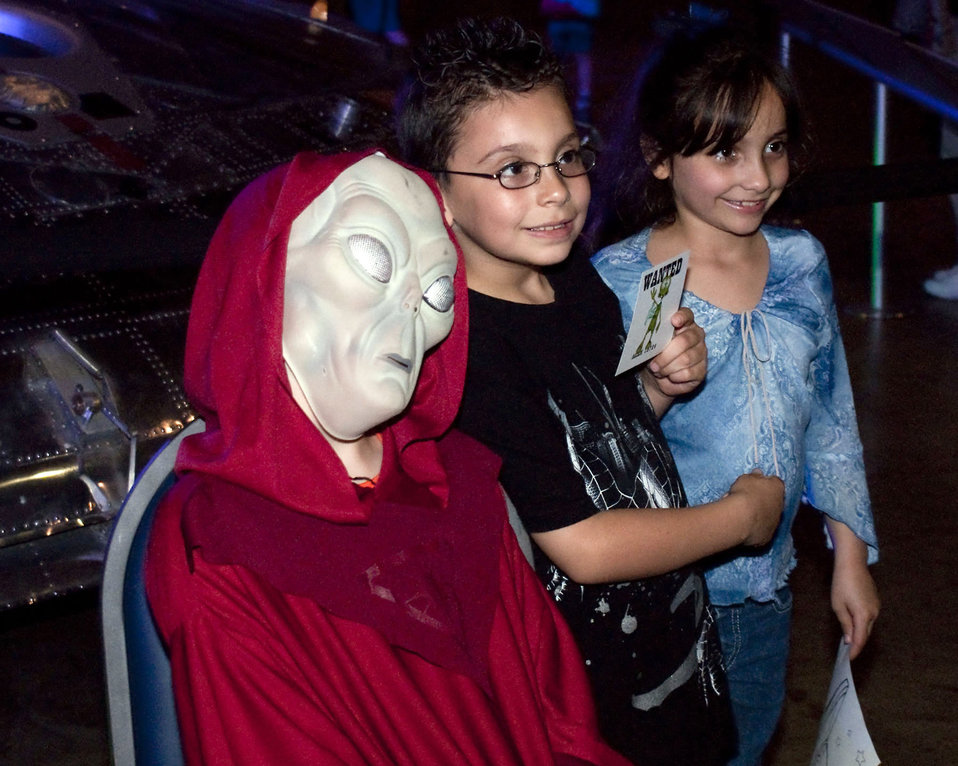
Huge crowd turns out for Night at the Air Force Museum

Visitors pose with an alien during Night at the Air Force Museum May 15 at the National Museum of the U.S. Air Force in Dayton, Ohio.